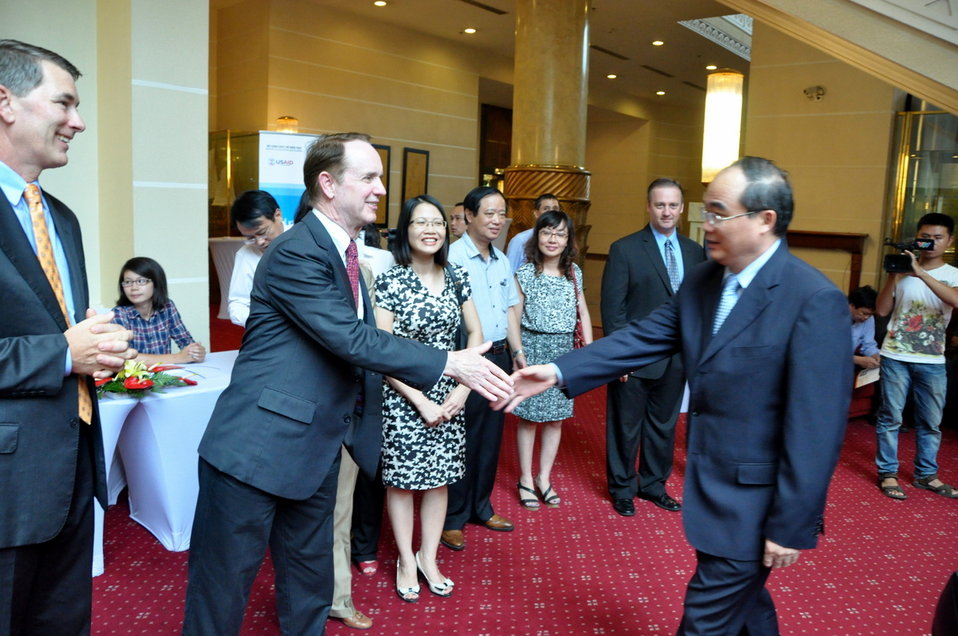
Higher Engineering Education Alliance Program Expansion Launch

Hanoi, August 20, 2012.